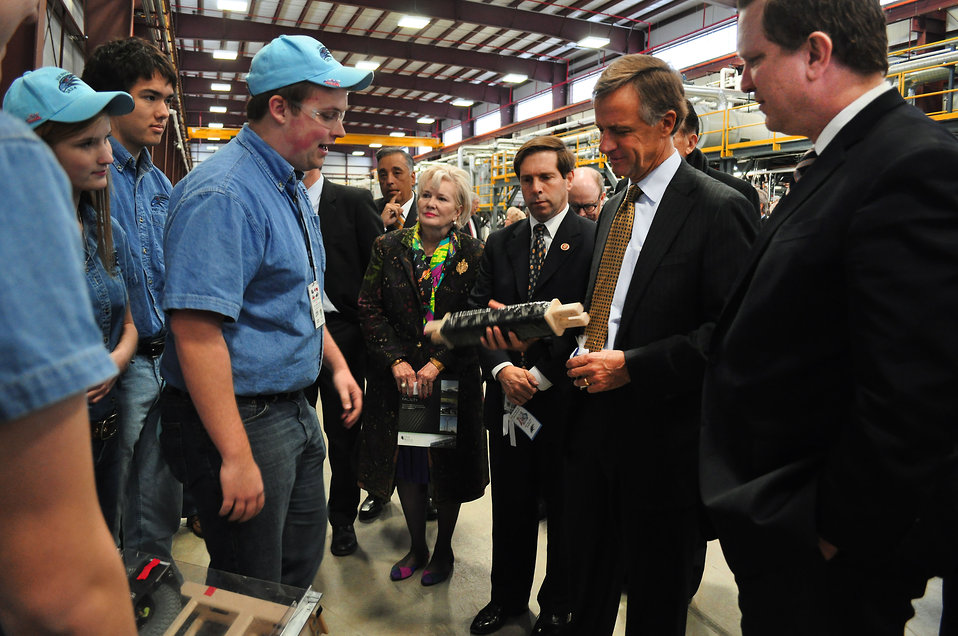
Carbon Fiber Technology Facilty Open House Oak Ridge Tennessee

13-025 DOE photo Lynn Freeny